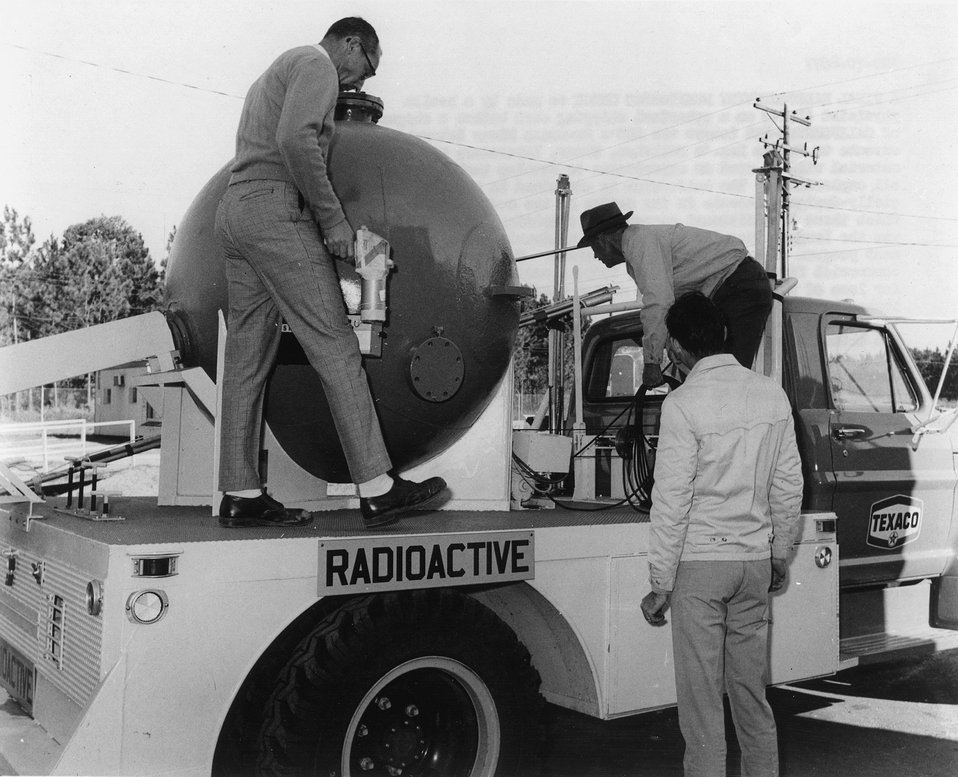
A final radioactivity monitoring check is made by a health physicist (left) on a spherical shipping cask before a shipment of CALIFORNIUM-252 leaves the AEC's Savannah River Laboratory enroute to Texaco Inc.'s Bellaire, Texas, Laboratory. c. 1970